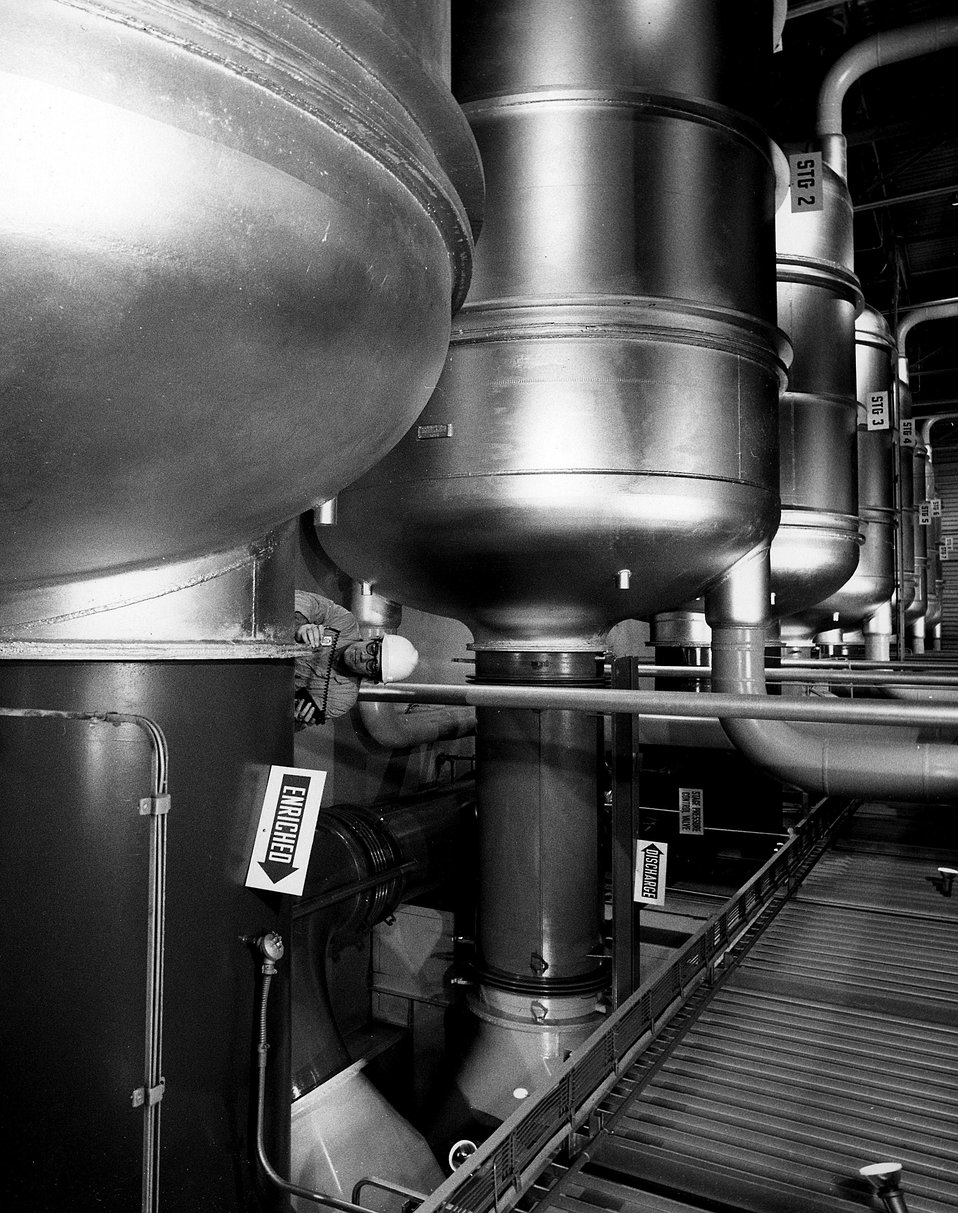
Worker at the Oak Ridge Gaseous Diffusion Plant uses a special leak-detection device to examine large piping of process equipment at the plant. Circa 1974.